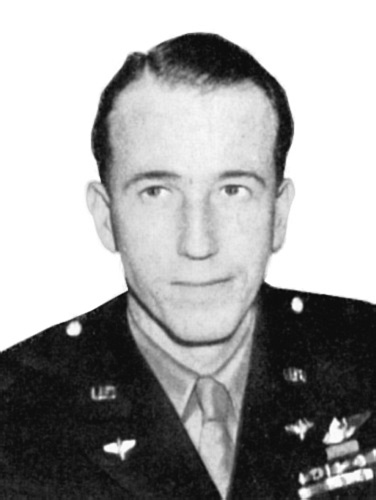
Brig. Gen. James H. Howard